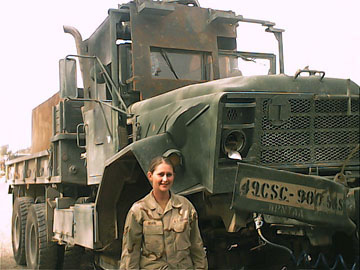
Sergeant recalls convoy duty in Iraq

IRAQ -- Staff Sgt. Amelia Solomon stands in front of the truck she was commanding when the truck in front of hers was hit by an improvised explosive device here. She earned a Purple Heart for the injuries she received during that convoy mission with the Army. Sergeant Solomon is assigned to the 100th Logistics Readiness Squadron at Royal Air Force Mildenhall, England.